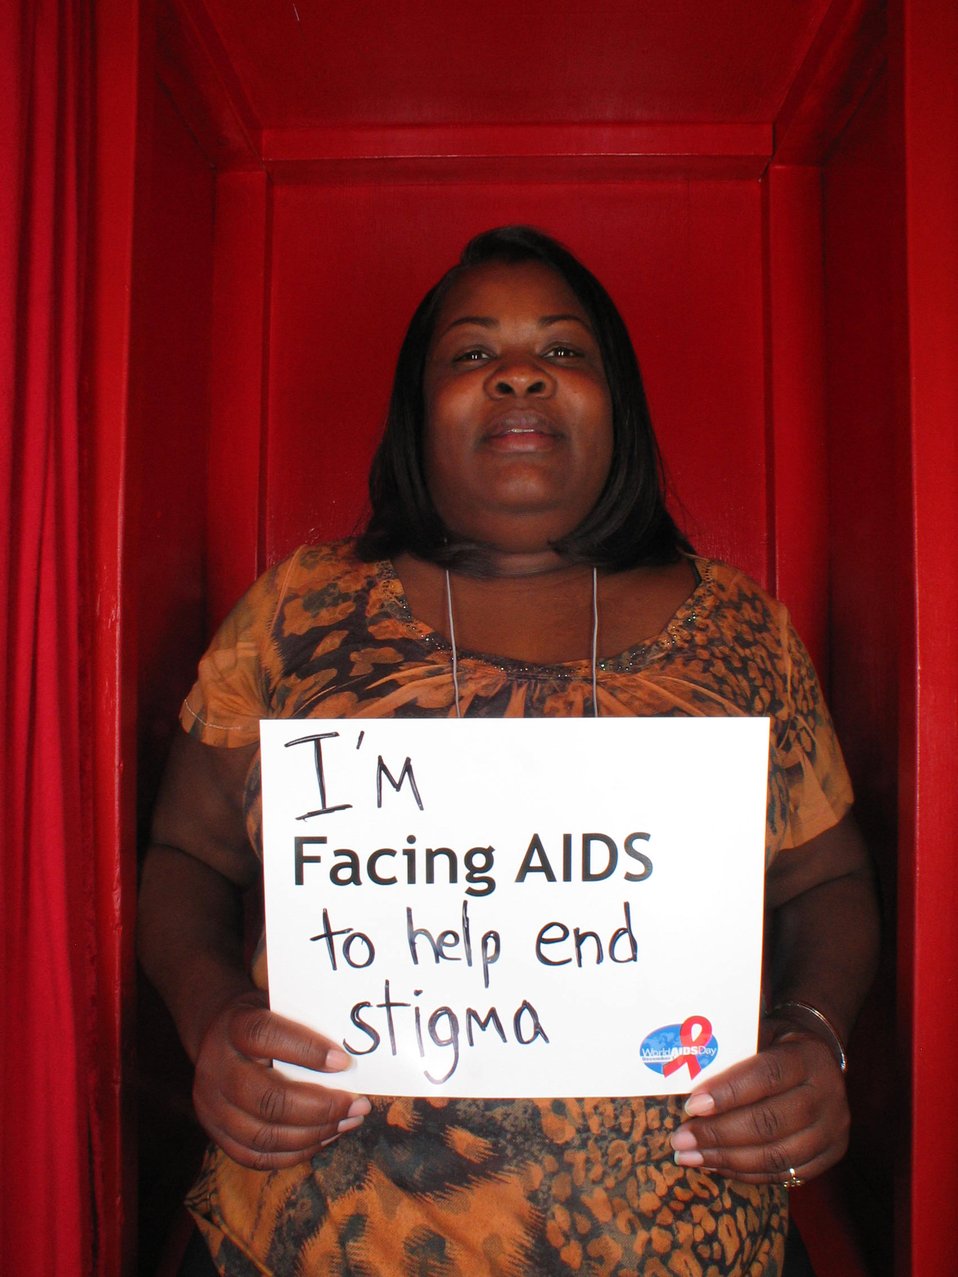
I'm Facing AIDS to help end stigma.